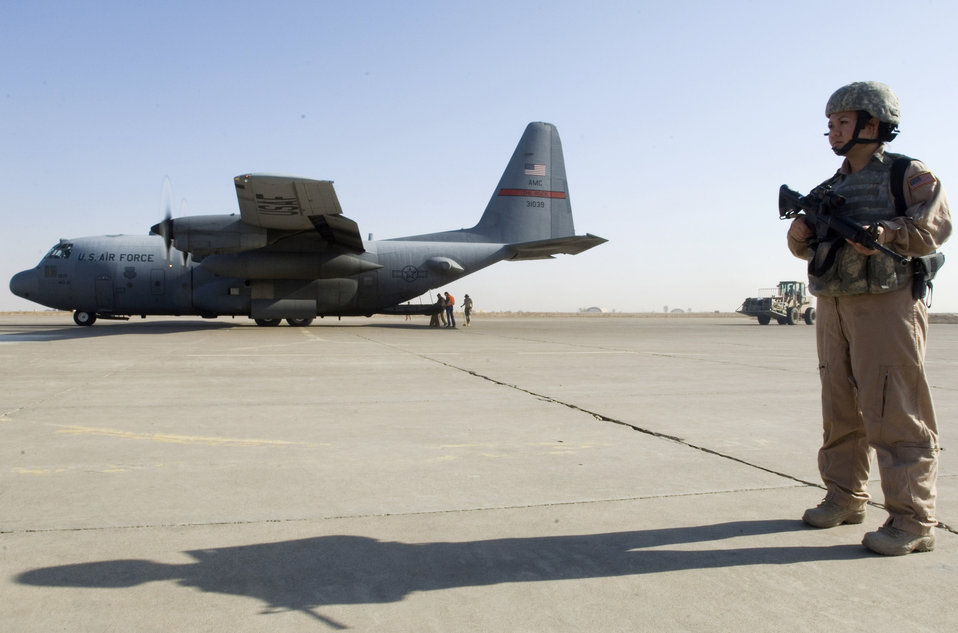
Airmen provide FAST coverage

Senior Airman Rosie Munoz scans the area for threats while a 777th Expeditionary Airlift Squadron C-130 Hercules unloads cargo Nov. 22 at a remote location in Iraq. Airman Munoz is a member of a 332nd Expeditionary Security Forces Squadron Fly Away Security Team. She grew up in Seoul, South Korea, and calls El Paso, Texas, home.